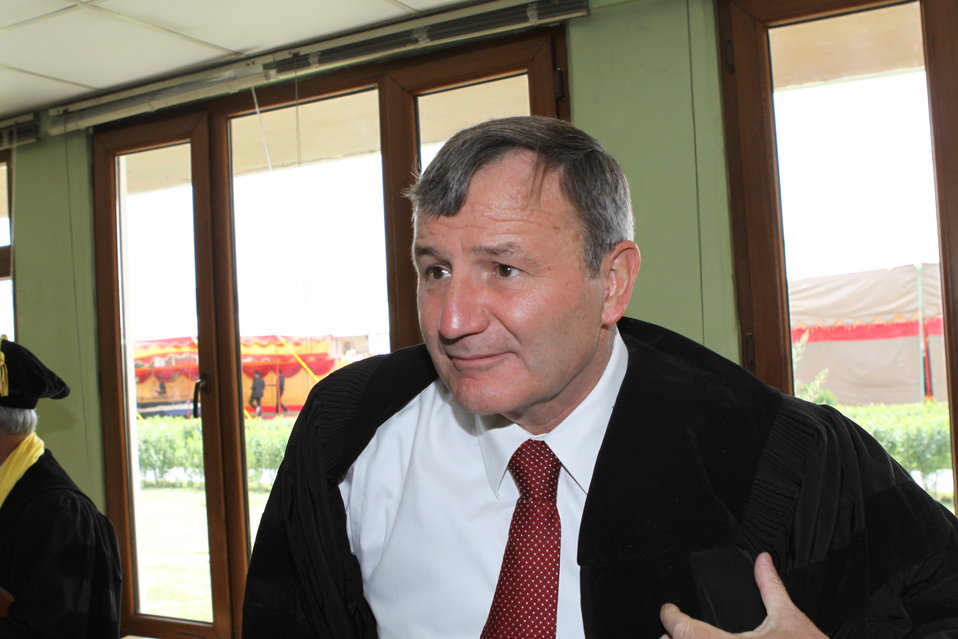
100526 AUAF Graduation 045